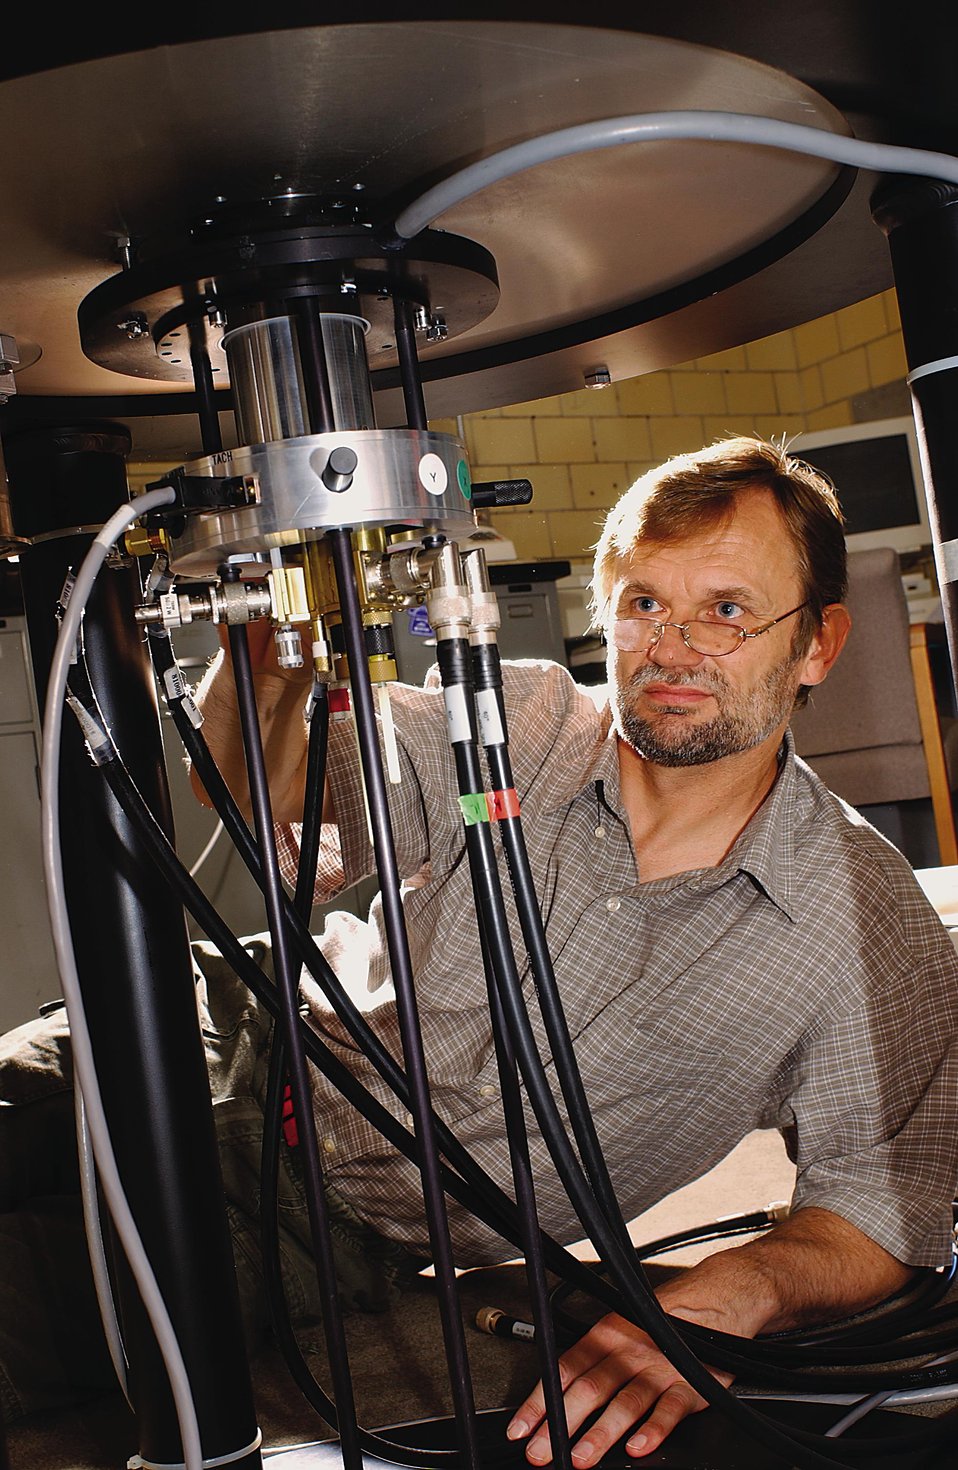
AMES SCIENTIST ADJUST THE PROBE CONTAINING THE SAMPLE TO BE EXAMINED USING NMR SPECTROSCOPY.

NUCLEAR MAGNETIC RESONANCE REVEALS THE ATOMIC STRUCTURE OF SOLIDS. THE NMR SPECTROMETER USES A MAGNETIC FIELD OF 9.4 TESLA, FIVE ORDERS OF MAGNITUDE BEYOND THAT OF THE EARTH'S MAGNETIC FIELD. USING NMR SPECTROSCOPY, SCIENTISTS COULD IDENTIFY THE ATOMIC FINGER PRINTS NEEDED TO RESOLVE QUESTIONS ASSOCIATED WITH THE STRUCTURE OF SOLID MATERIALS.